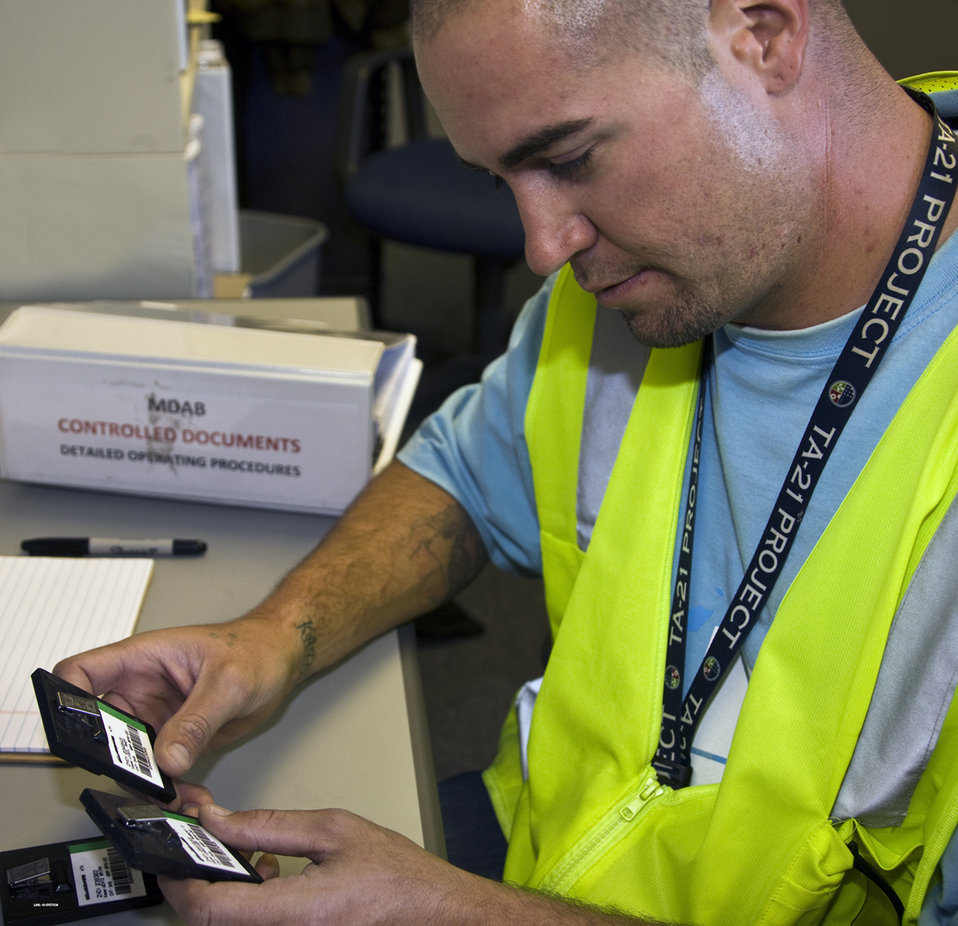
Angelo Maestas

An Española, N.M., native and electrician, Maestas was unemployed for about three months before being hired at the Technical Area 21 (TA-21) Recovery Act project operations center at Los Alamos National Laboratory.